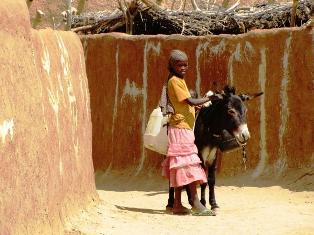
A refugee girl transports water in Am Nabak Camp in eastern Chad on February 17, 2009. In fiscal year 2010, two principal factors drove PRM’s development of a humanitarian strategy for Chad and the region. The first was security. Despite the presence of UN peacekeepers in Chad, both civilians and humanitarian workers have been subjected to an increasing level of banditry: robbery, carjackings, and at times even kidnapping and murder. Now the Chadian government has asked the UN mission to leave the country, an event that would further expose humanitarians and refugees to danger. The second factor was eastern Chad’s qualification as a protracted refugee situation, meaning it has been in existence for over five years. Even with some hopeful political steps towards peace in Darfur in early 2010, the refugees will likely remain in Chad for several more years. With lifesaving services well-established in the camps, therefore, PRM has shifted its focus to programs that provide a longer-term benefit, such as education and vocational training.